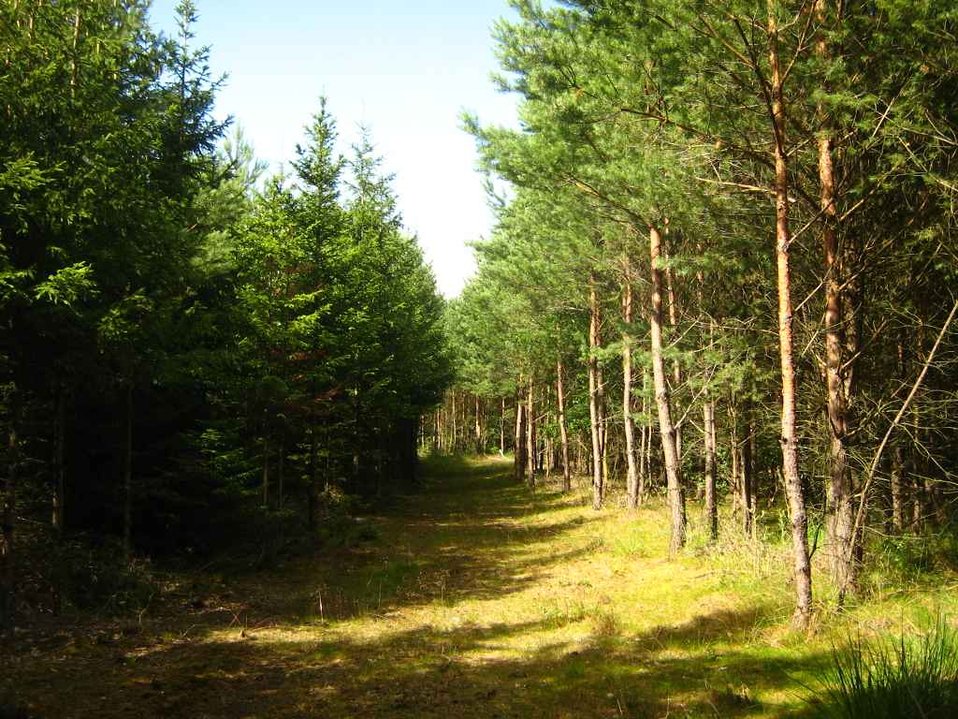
Deutsch: Ueckermuender Heide bei Jatznick (Landkreis ucker-Randow).